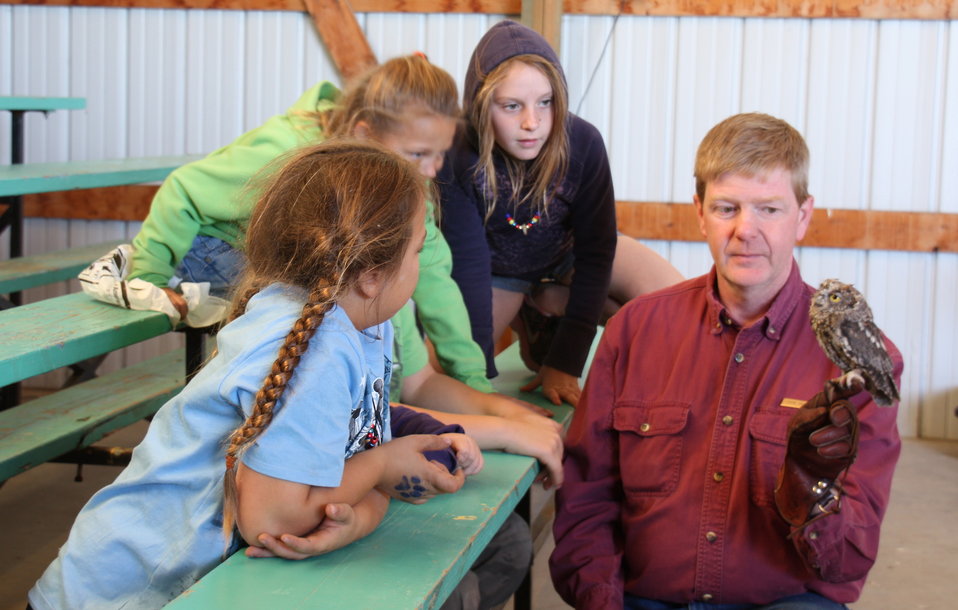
Prairie Fest 2012

Western Screech Owl.